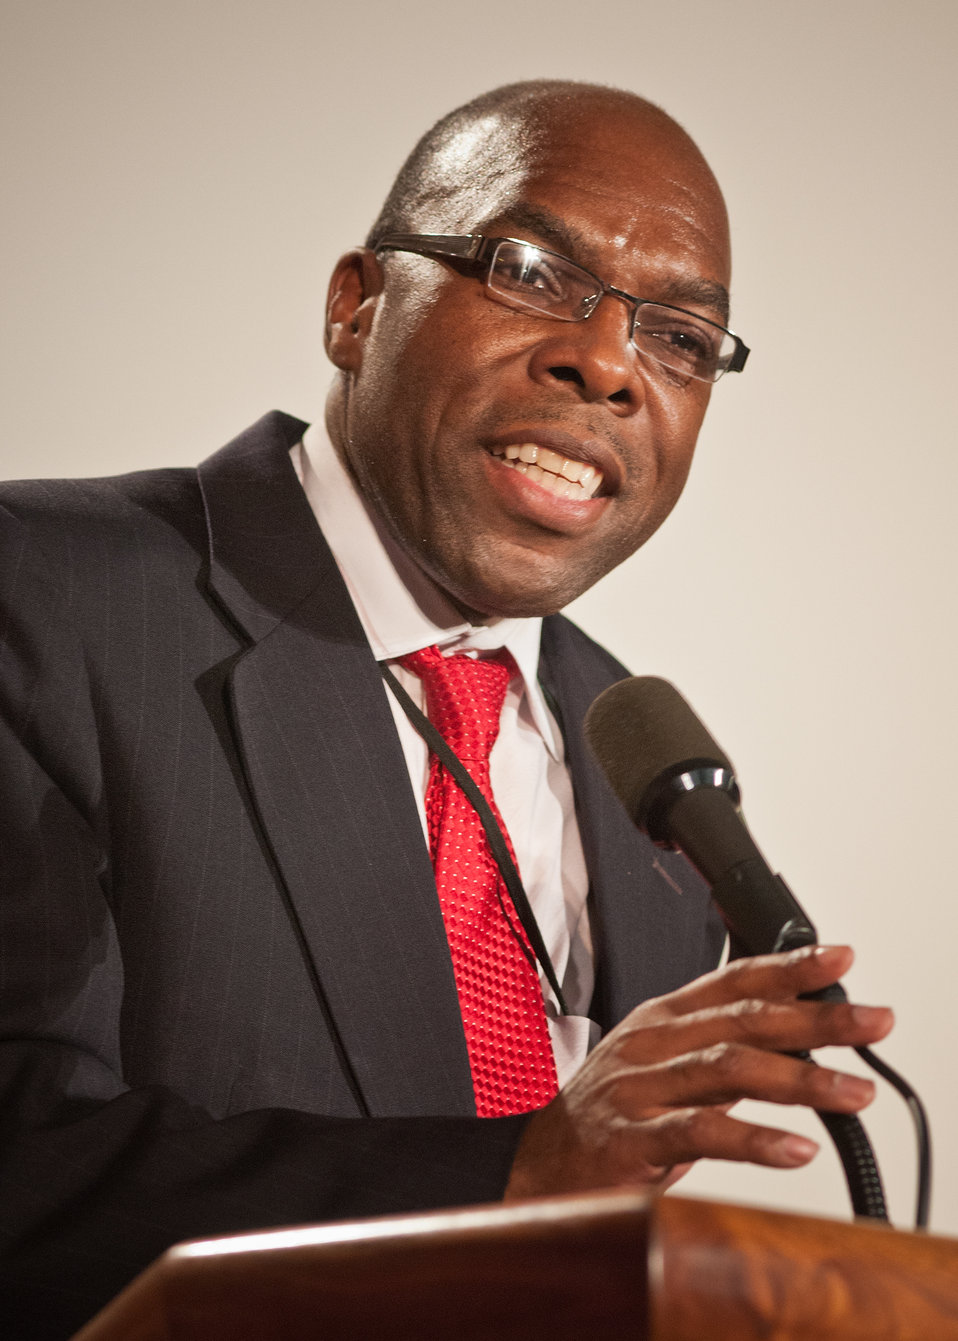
Reverend Dwayne Jones, Office of Executive Services offers the benediction at the close of the National Service Day and Martin Luther King Celebration in honor of Dr. Martin Luther King Jr.’s contributions to the Civil Rights Movement at the United States Department of Agriculture in Washington, D.C., on Thursday, January 12, 2012.